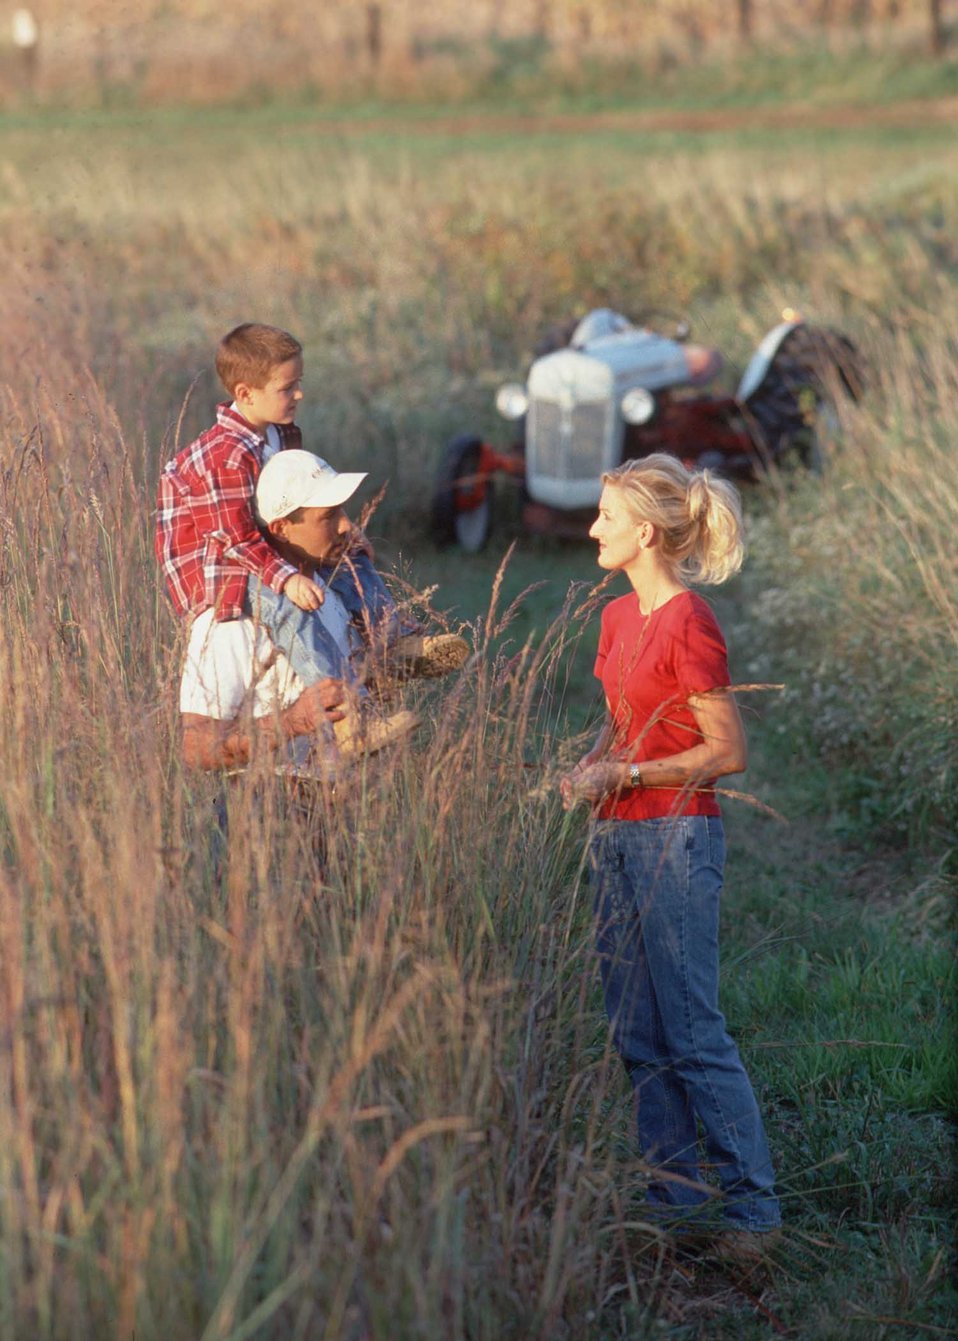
A family enjoys native grass plantings on a farm in central Iowa.